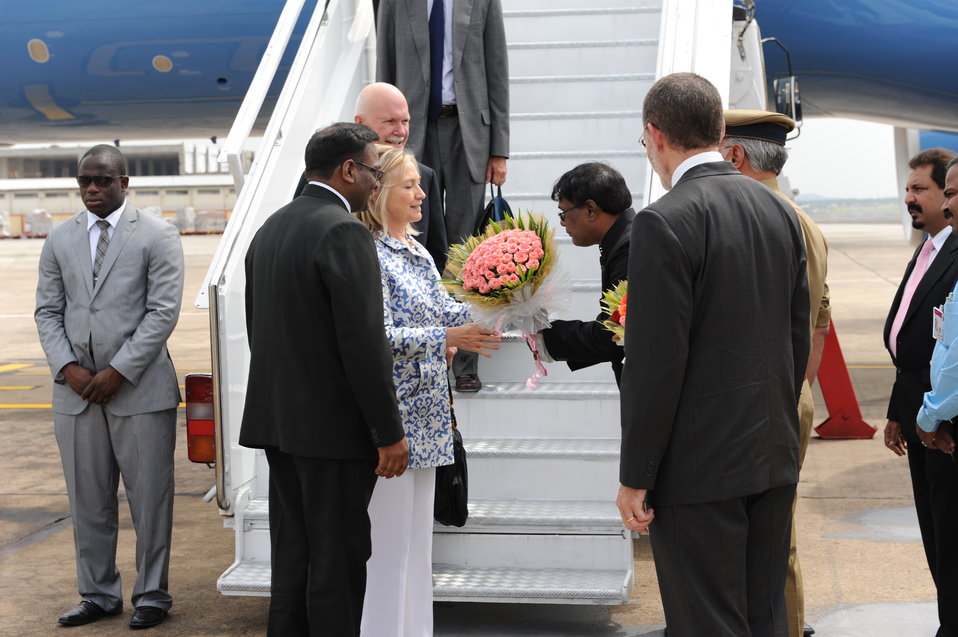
A Tamil Nadu Government Protocol Officer Gives Secretary Clinton Roses

A Protocol officer with the Tamil Nadu government gives U.S. Secretary of State Hillary Clinton a bouquet of pink roses at Chennai Airport in Chennai, India, on July 20, 2011. [Paul Cohn/ State Department photo]